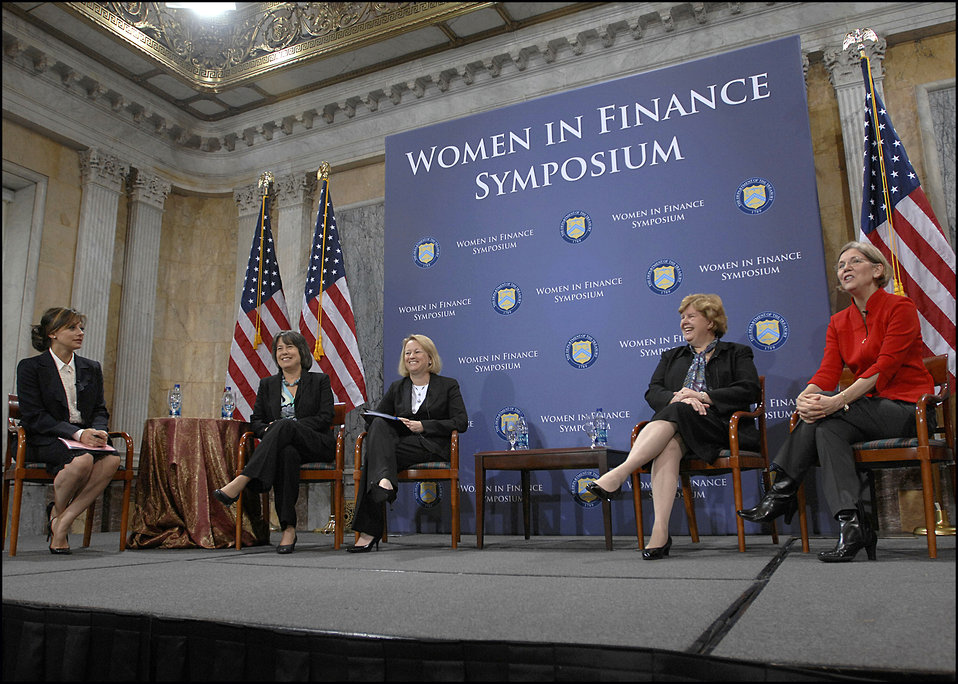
Women in Finance Symposium, 03/29/2010

Maria Bartiromo of CNBC moderates a panel with FDIC Chair Sheila Bair, SEC Chair Mary Schapiro, CEA Chair Christina Romer, and COP Chair Elizabeth Warren at the Women in Finance Symposium, March 29, 2010.